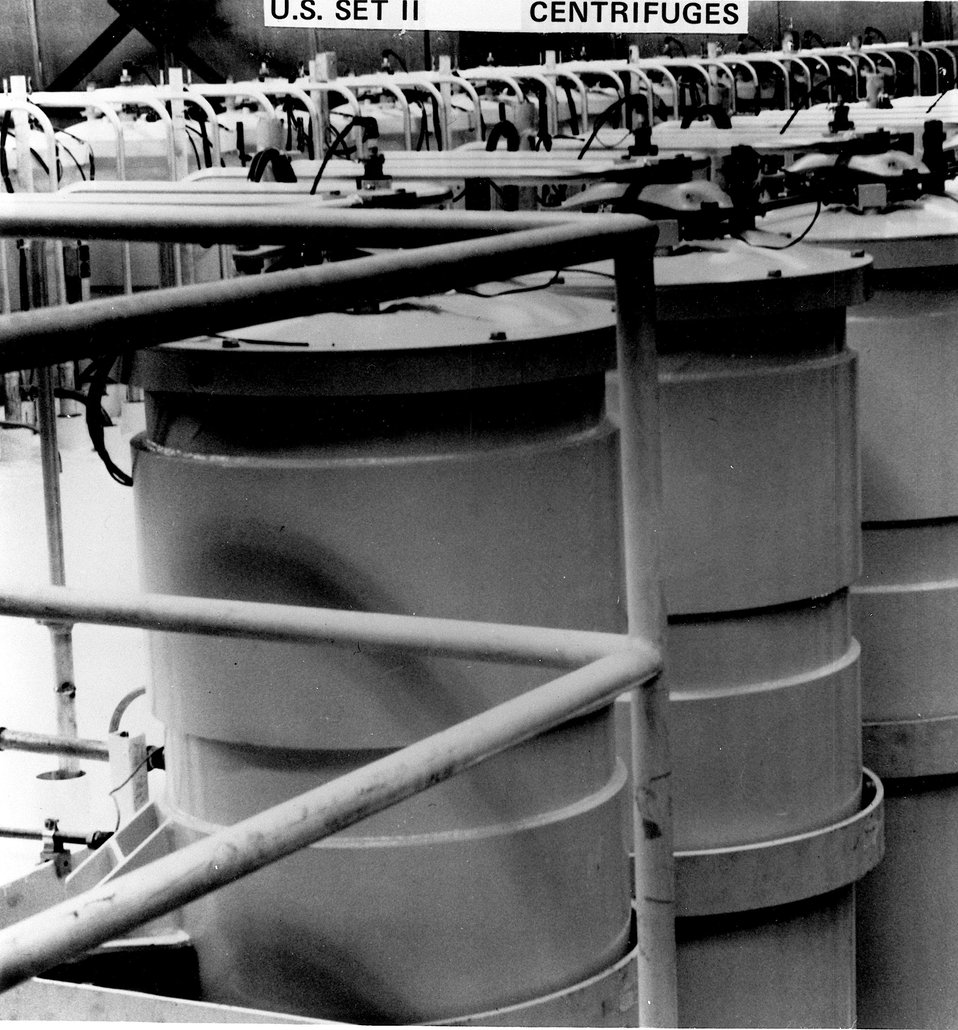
An area that holds great promises for a firm U.S. uranium enrichment supply position in the mid 1980's and beyond, is the development of gas centrifuge technology. Circa 1977.